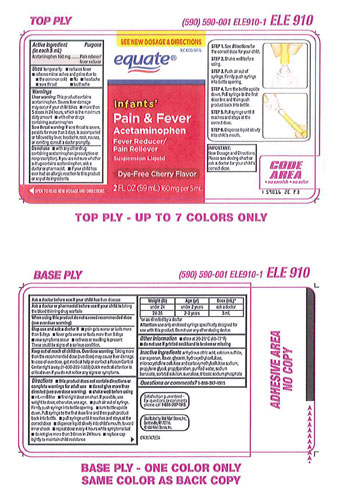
Recalled - Acetaminophen infant suspension liquid

November 1, 2013 – Product Recall – Perrigo Initiates Nationwide Voluntary Product Recall of Acetaminophen Infant Suspension Liquid, 160 Mg/5 Ml, Due to a Potential Defect with the Co-packaged Oral Syringe.